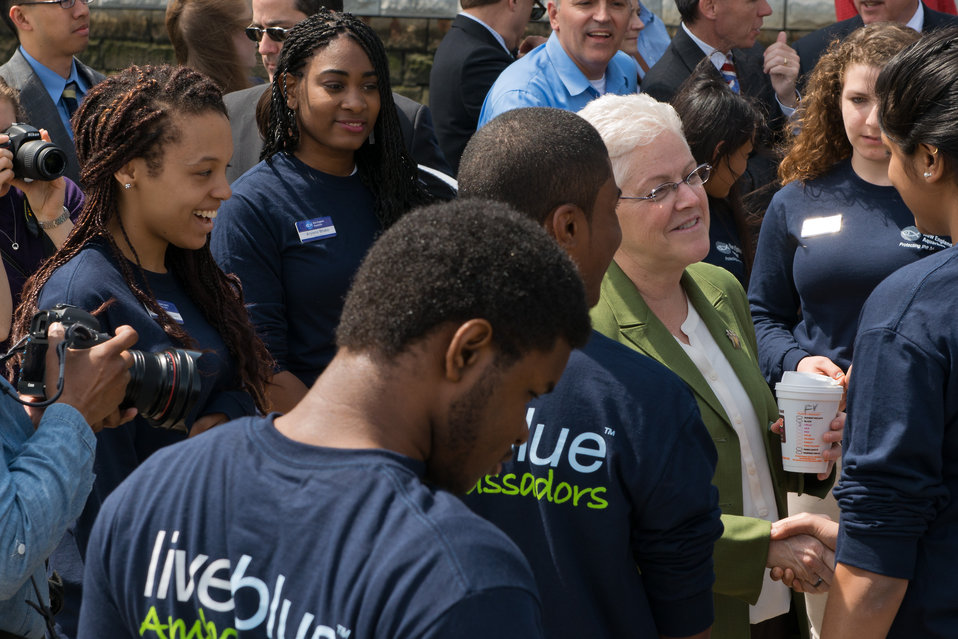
A Day In The Life of the EPA Administrator - April 22, 2014 12:01 pm

Saying hello to Climateens, a group of young adults engaged in the issue of climate change sponsored by the New England Aquarium.